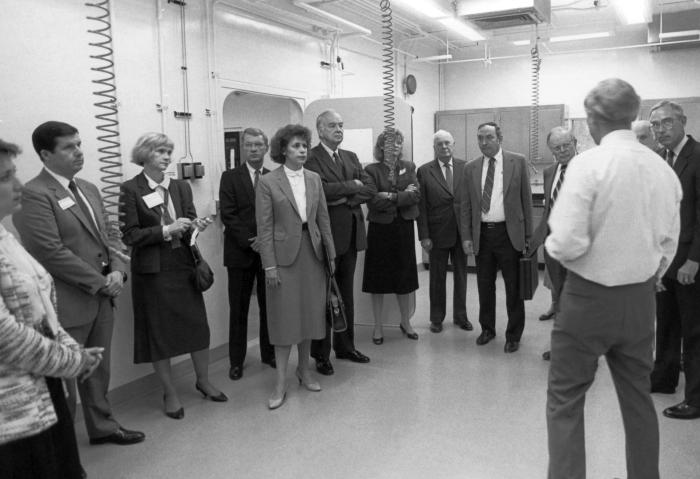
This photograph depicted members of the Clifton Corridor Task Force touring a Centers for Disease Control virology building in 1988.